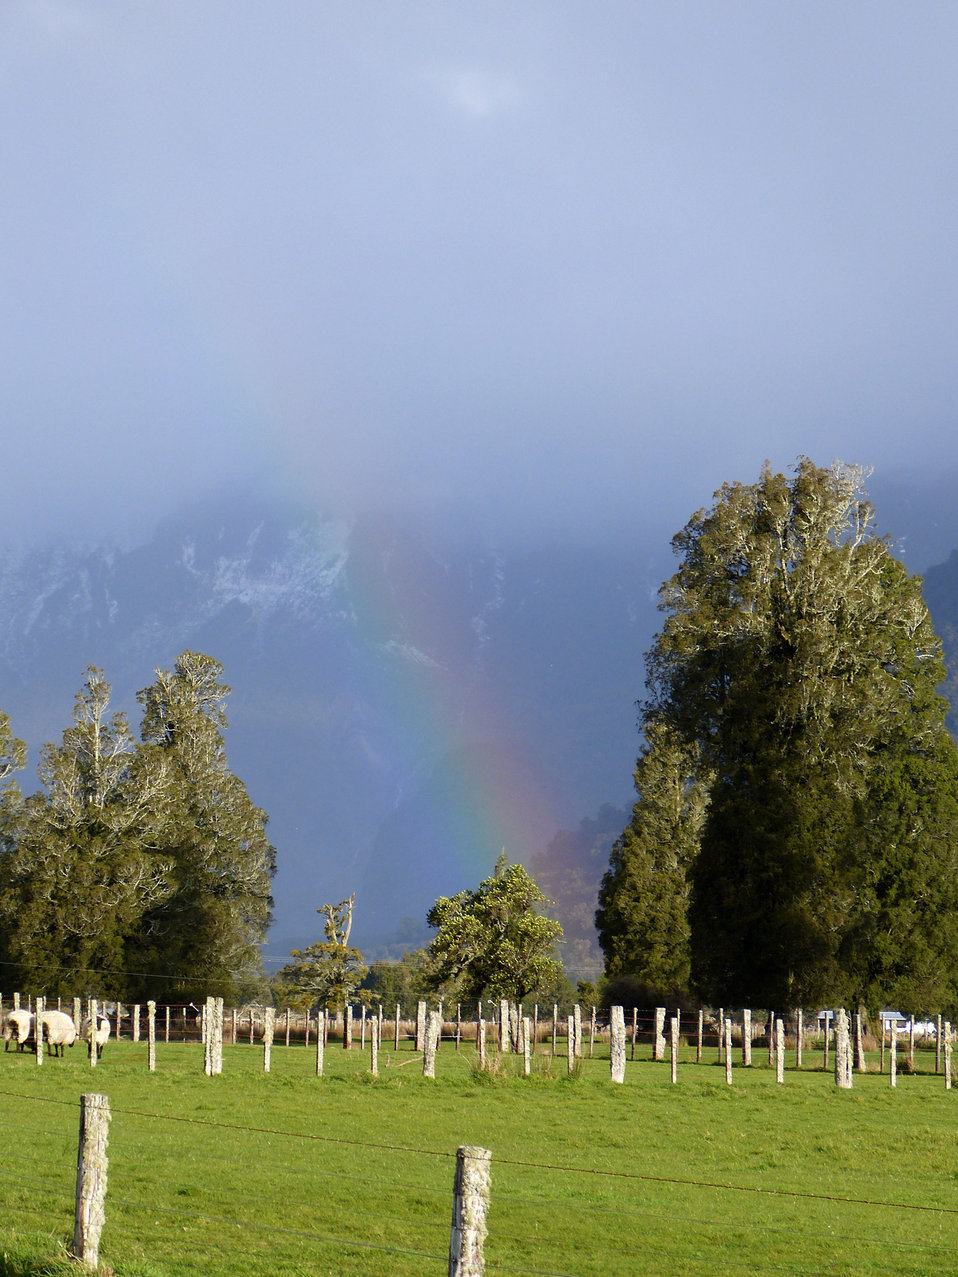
Rainbow in fox glacier.